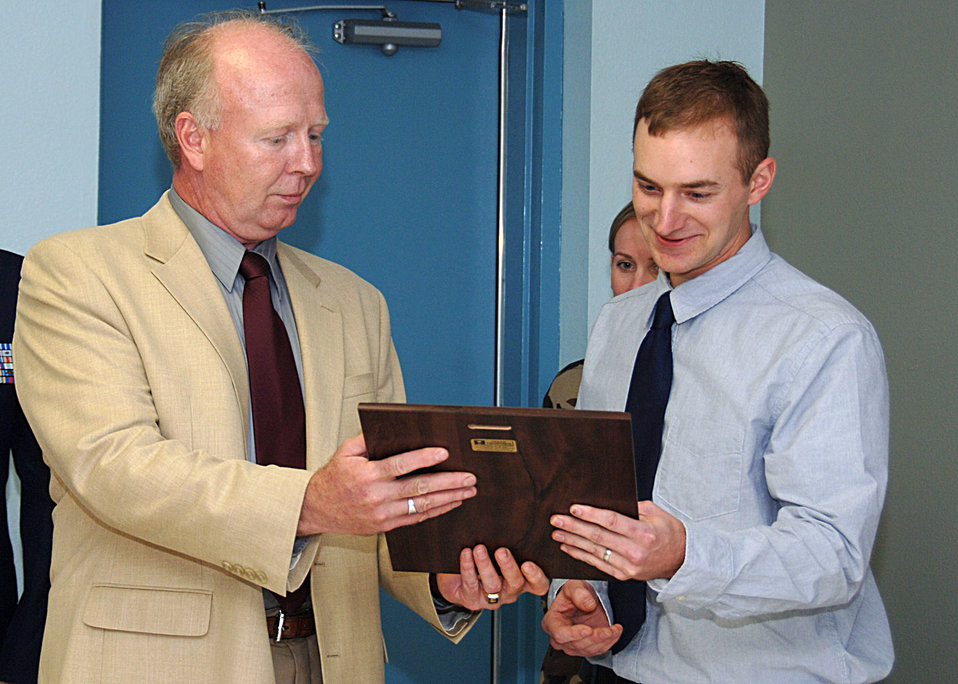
Artist honors Air Force medical field with 20-foot mural

Artist Jacob Galey, husband of Capt. Lisa Mull a psychology resident with the 59th Medical Operations Squadron, receives a plaque from retired Maj. Ron Little at Camp Rissington, on Lackland Air Force Base, Texas, April 24. The plaque thanked Mr. Galey for his work on the Air Force Medical Service mural he painted on the Medical Unit Readiness Training site classroom wall for the 59th MDW Readiness Division. The mural depicts the past, present and future of the medical corps.